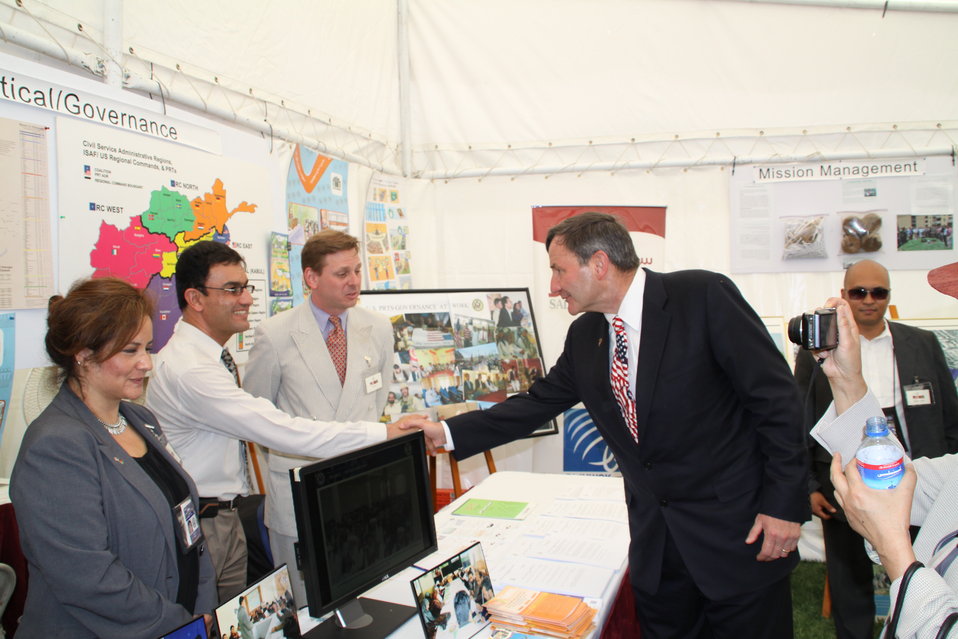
Kabul Official July 4th Celebration